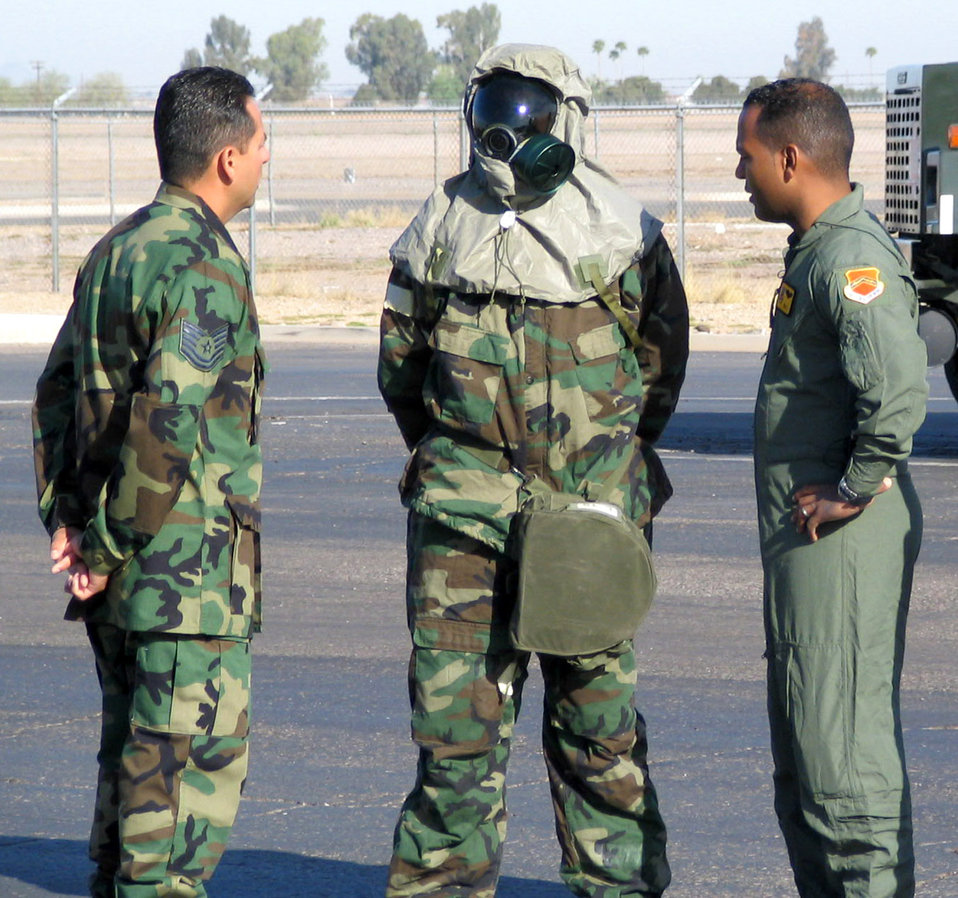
'Que Bien' Air Force Week

Tech. Sgt. Jose Camacho (left) briefs the fuels management flight mission to Tony Dandrades while Airman 1st Class Jason Lord models chemical warfare protective gear March 21 at Luke Air Force Base, Ariz. Mr. Dandrades, who served as an honorary commander for the day, is a Univision reporter for the nationally televised